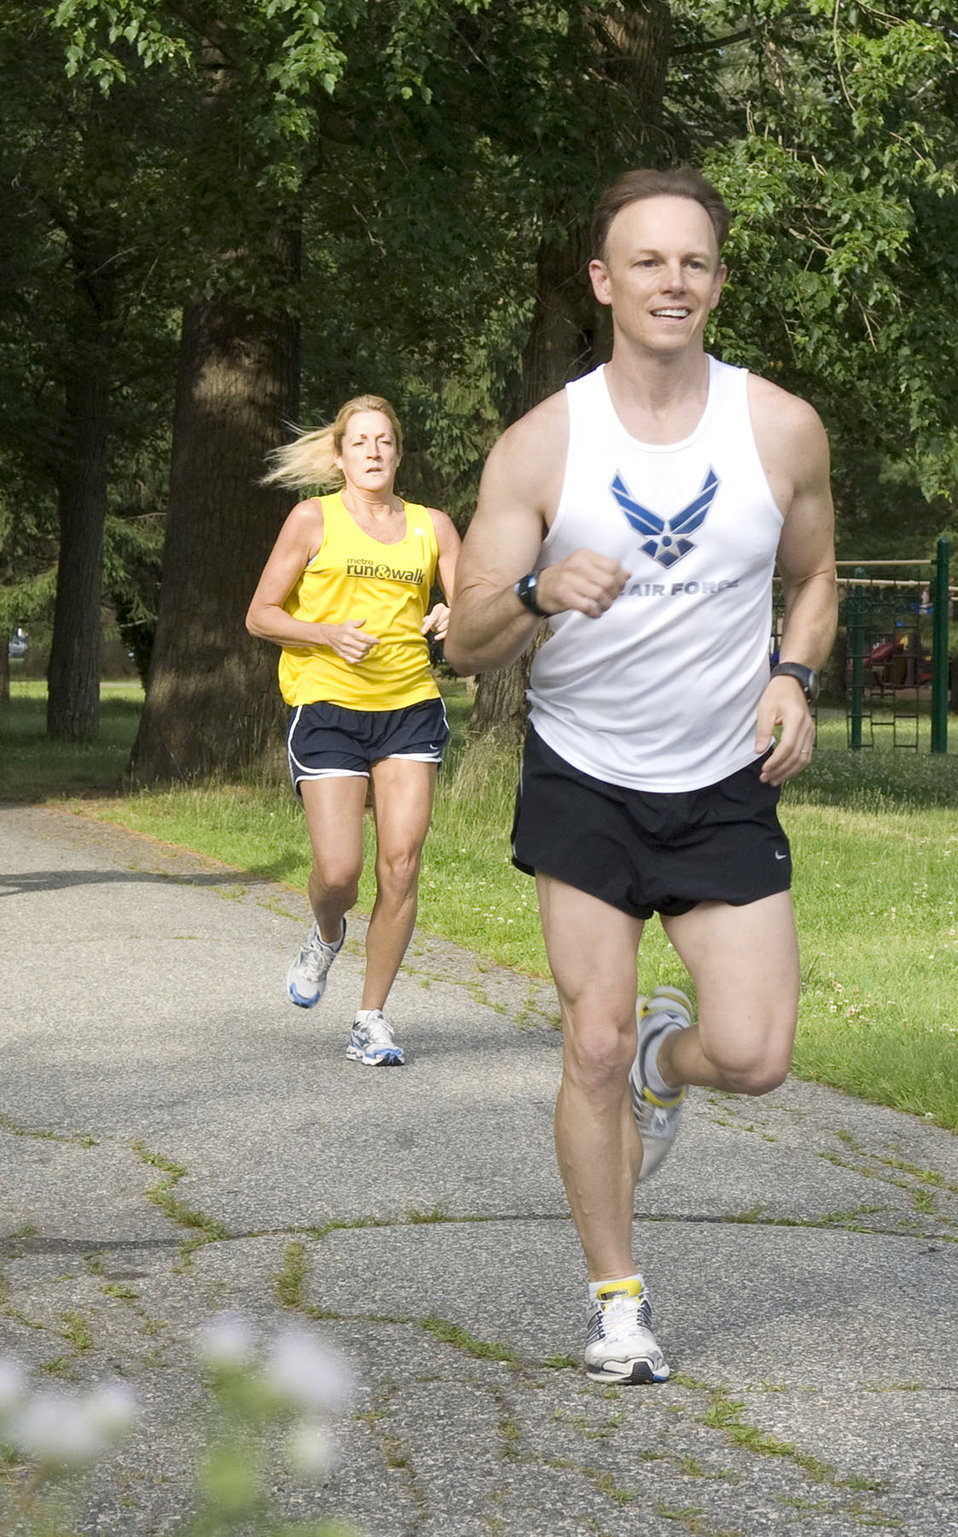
Hanscom major

Col. Mary McRae (left) and Maj. (Dr.) Derek Speten run in the Summer Thunder 10K race, which began and finished at the Fitness and Sports Center June 16, 2010, at Hanscom Air Force Base, Mass. Colonel McRae is the Electronic Systems Center chief of staff. Doctor Speten is the 66th Medical Group Diagnostics and Therapeutics flight commander.